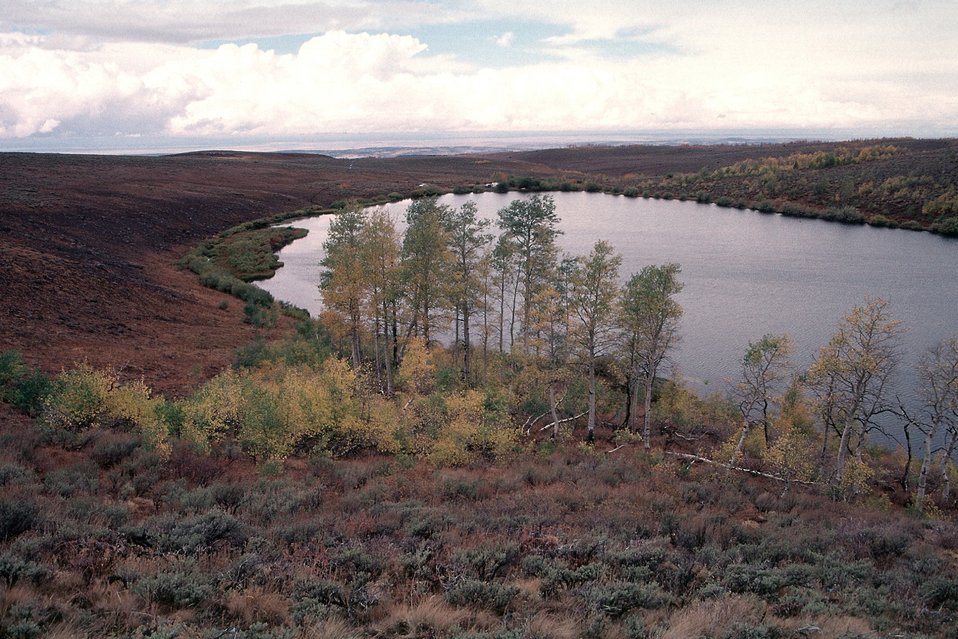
Aspens at Fish Lake, Steen's Mountain.